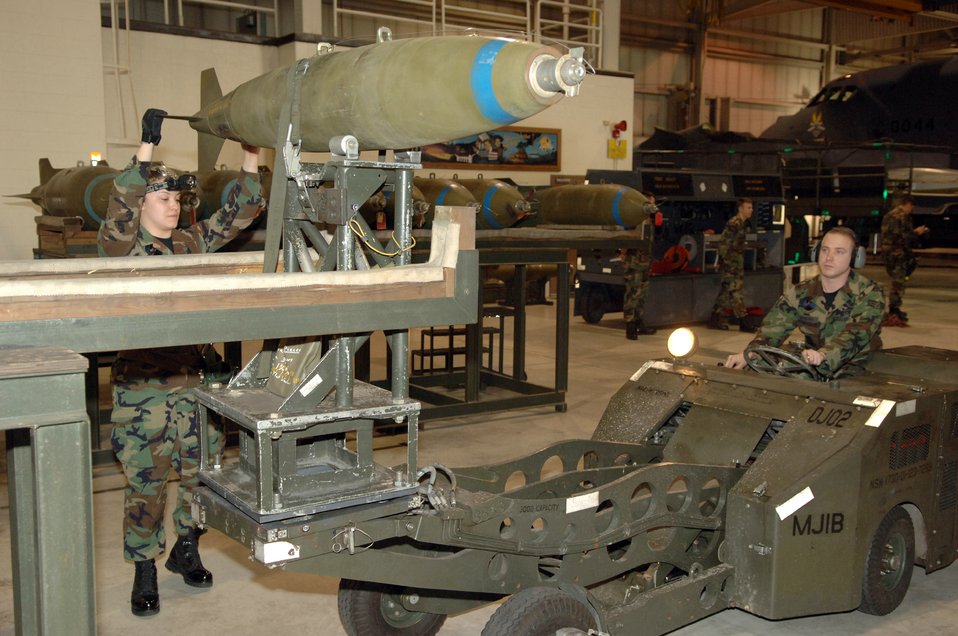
Secure bomb

MINOT AIR FORCE BASE, N.D. (AFPN) -- Senior Airmen Stephanie Lopez and Nathon Bowling load a bomb onto an MJ-1 jammer during a load crew competition here Jan. 27. The crews loaded nine Mk-82 500-pound general purpose bombs onto a B-52H Stratofortess. The four-person crews were graded on teamwork, safety, precision and speed. Both Airmen are weapons loaders assigned to the 5th Aircraft Maintenance Squadron.